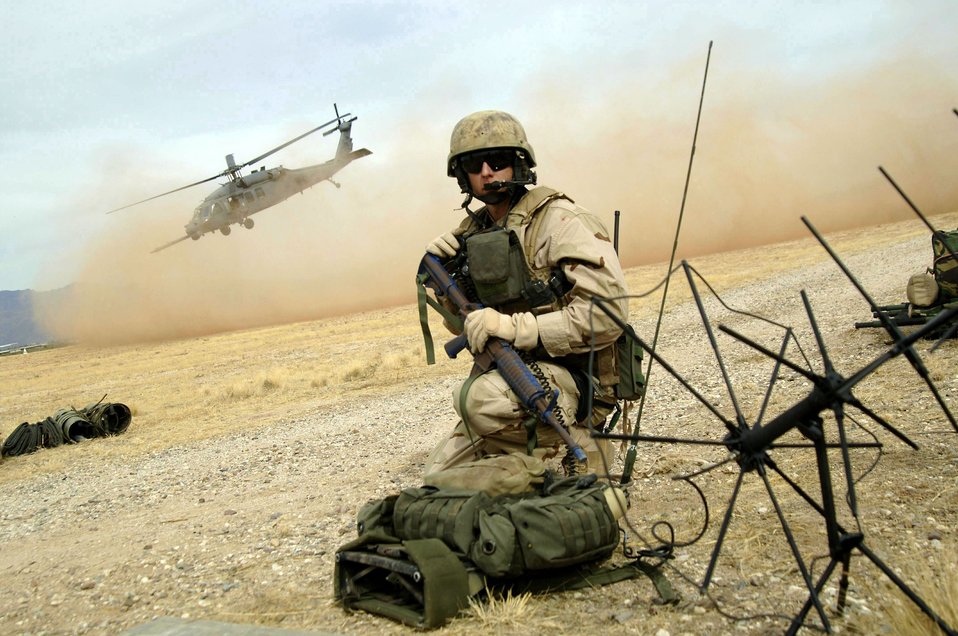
Combat search and rescue returns to ACC

A combat rescue officer communicates with a HH-60G Pave Hawk helicopter crew during a joint U.S. and Dutch mass casualty exercise Tuesday, Feb. 14, 2006, at Davis-Monthan Air Force Base, Ariz. Administrative control for select active-duty Air Force combat search and rescue assets from is moving from Air Force Special Operations Command back to Air Combat Command.